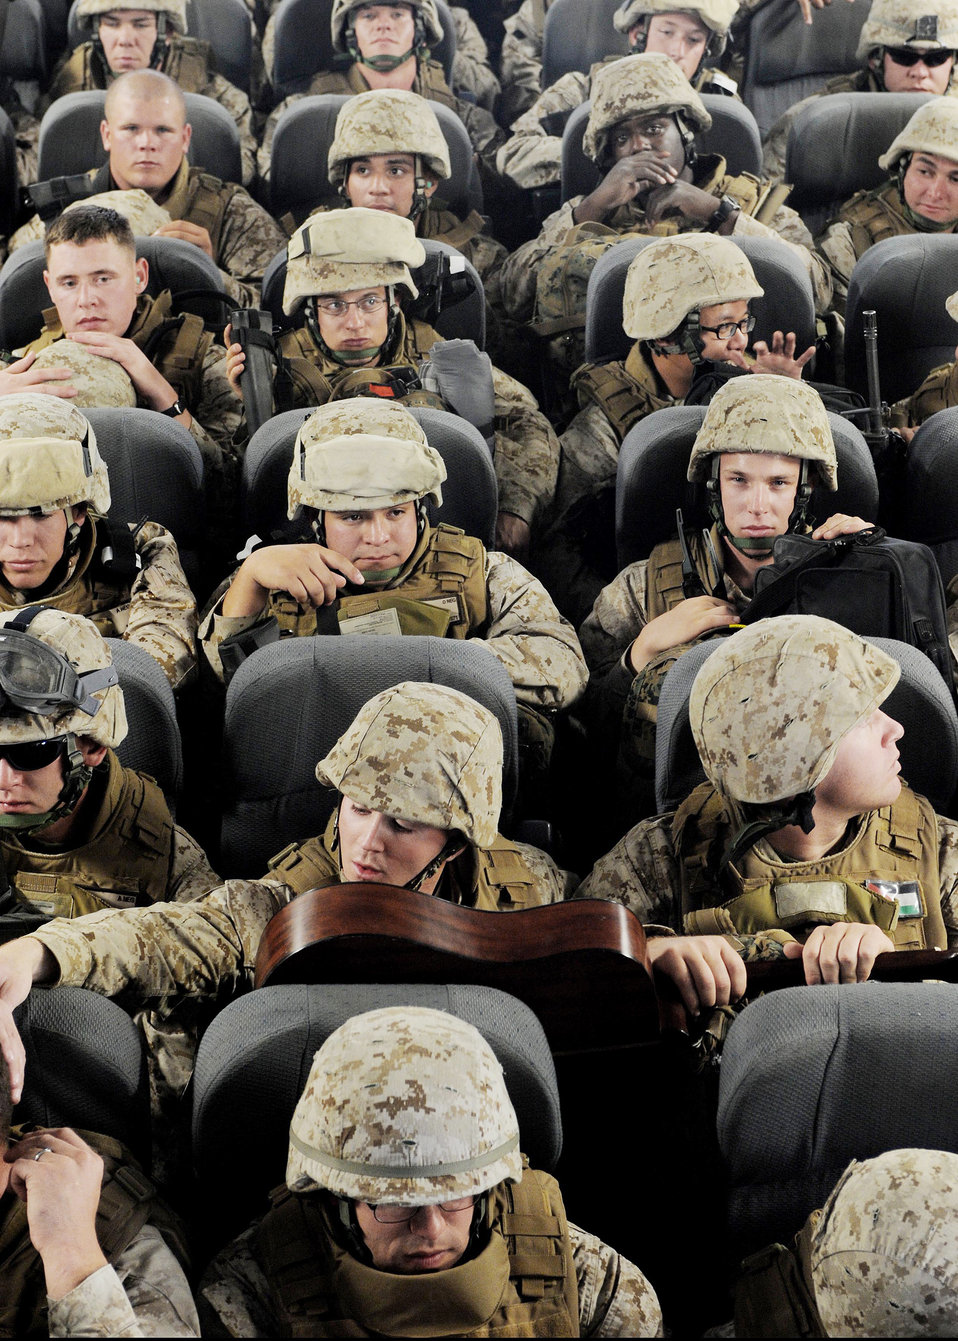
Manas Airmen move troops into Afghanistan

Marines sit on a C-17 Globemaster III en route to Afghanistan April 2, 2010 at the Transit Center at Manas, Kyrgyzstan. Thousands of Marines, Soldiers, Airmen and coalition troops transit through here each month in support of Operation Enduring Freedom. In March, 376th Expeditionary Logistics Readiness Squadron Airmen pushed through 50,000 multinational, U.S. and coalition troops. The Marines are from the 7th Engineer Support Battalion, Marine Corps Base Camp Pendleton, Calif.